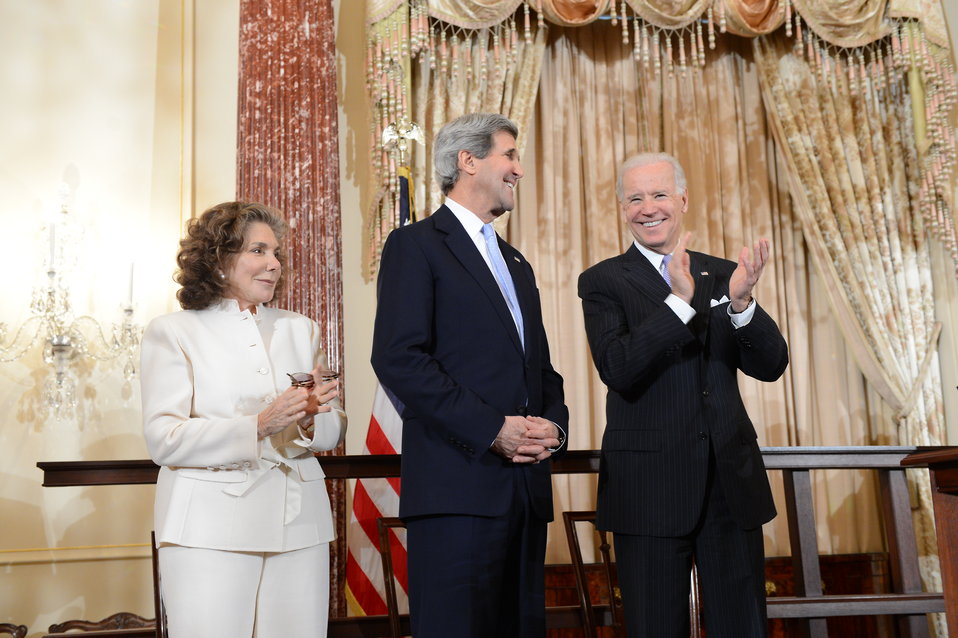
Vice President Biden Applauds Secretary Kerry and His Wife Teresa Heinz Kerry

U.S. Vice President Joe Biden applauds U.S. Secretary of State John Kerry and his wife, Teresa Heinz Kerry, during Secretary Kerry's ceremonial swearing-in at the U.S. Department in State in Washington, D.C., February 6, 2013.